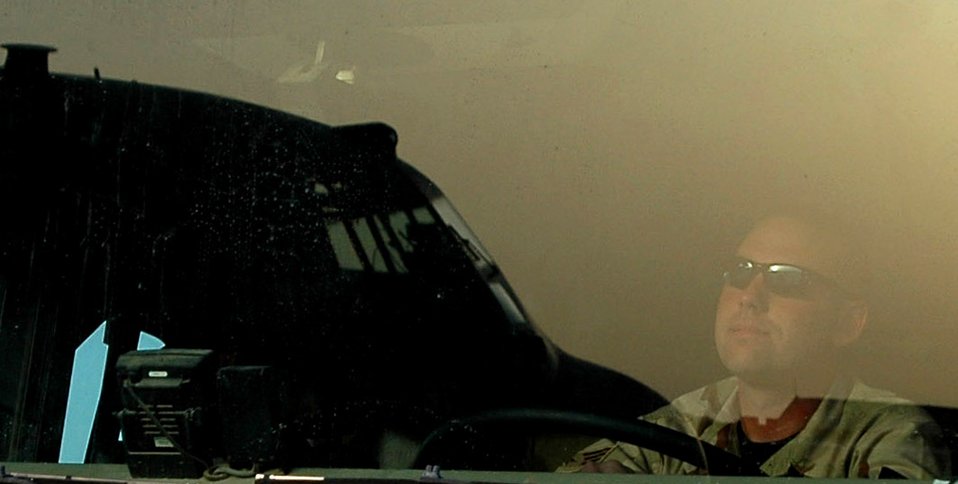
CENTAF Airpower Summary for April 10, 2007

Sustaining the air component's ability to deliver airpower where and when coalition ground forces need it means Airmen like firefighter Senior Airman Dan Connelly at Ali Air Base, Iraq, stand ready on the flightline. Airman Connelly monitors activity around a C-130 Hercules hosted by the 407th Air Expeditionary Group March 21. The plane is flown in support of Operation Iraqi Freedom by a Nevada Air National Guard crew assigned to the 192nd Air Expeditionary Squadron.